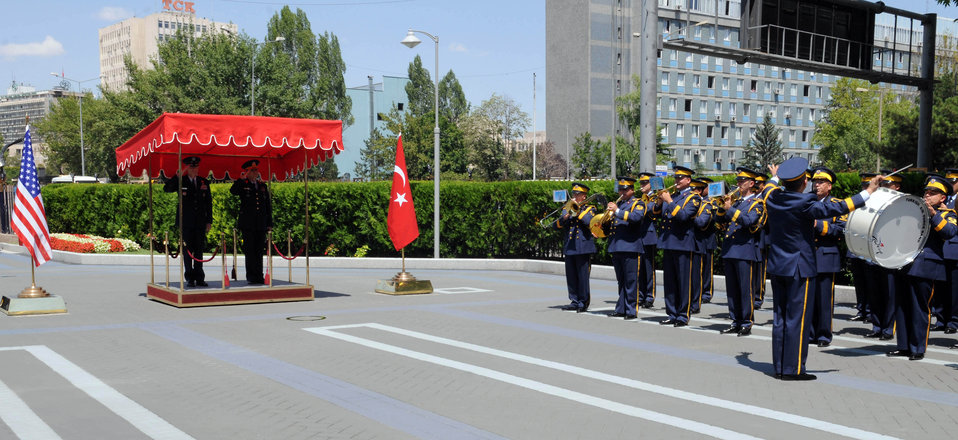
CSAF visits Turkey

Air Force Chief of Staff Gen. Norton Schwartz and Gen. Hasan Aksay, commander of the Turkish air force, salute during a welcome ceremony at the Turkish air force headquarters July 19, 2010, in Ankara, Turkey. The ceremony welcomed General Schwartz for his multi-day visit to Turkey. A Turkish military band played the U.S. and Turkish national anthems during the ceremony.